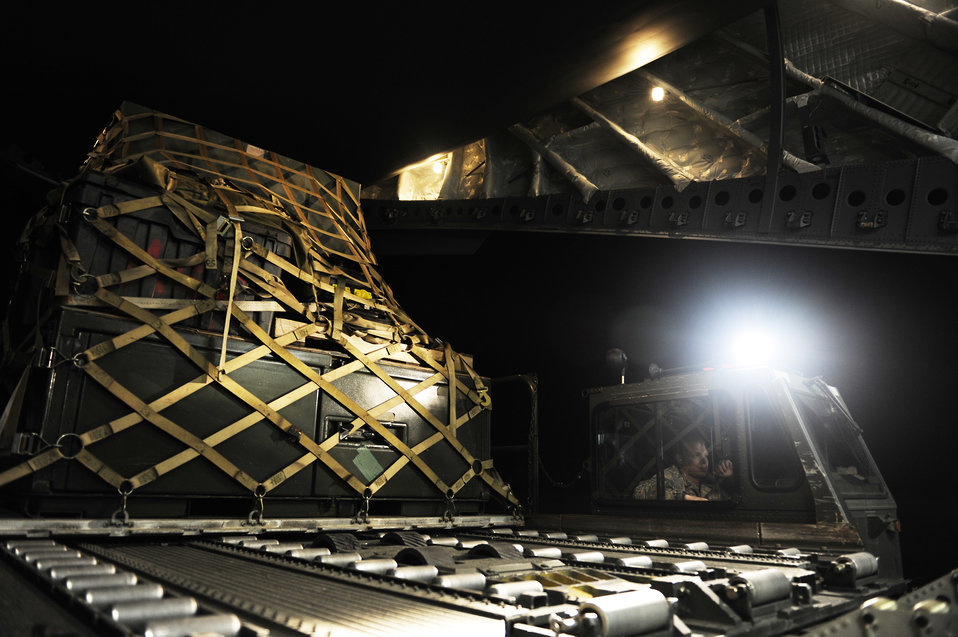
Haiti Relief Operations

Airmen load cargo onto a C-17 Globemaster III Jan. 14, 2010 at Joint Base McGuire-Dix-Lakehurst, N.J., supporting relief efforts to Haiti. The Airmen are assigned to the 621st Contingency Response Wing at JB McGuire.